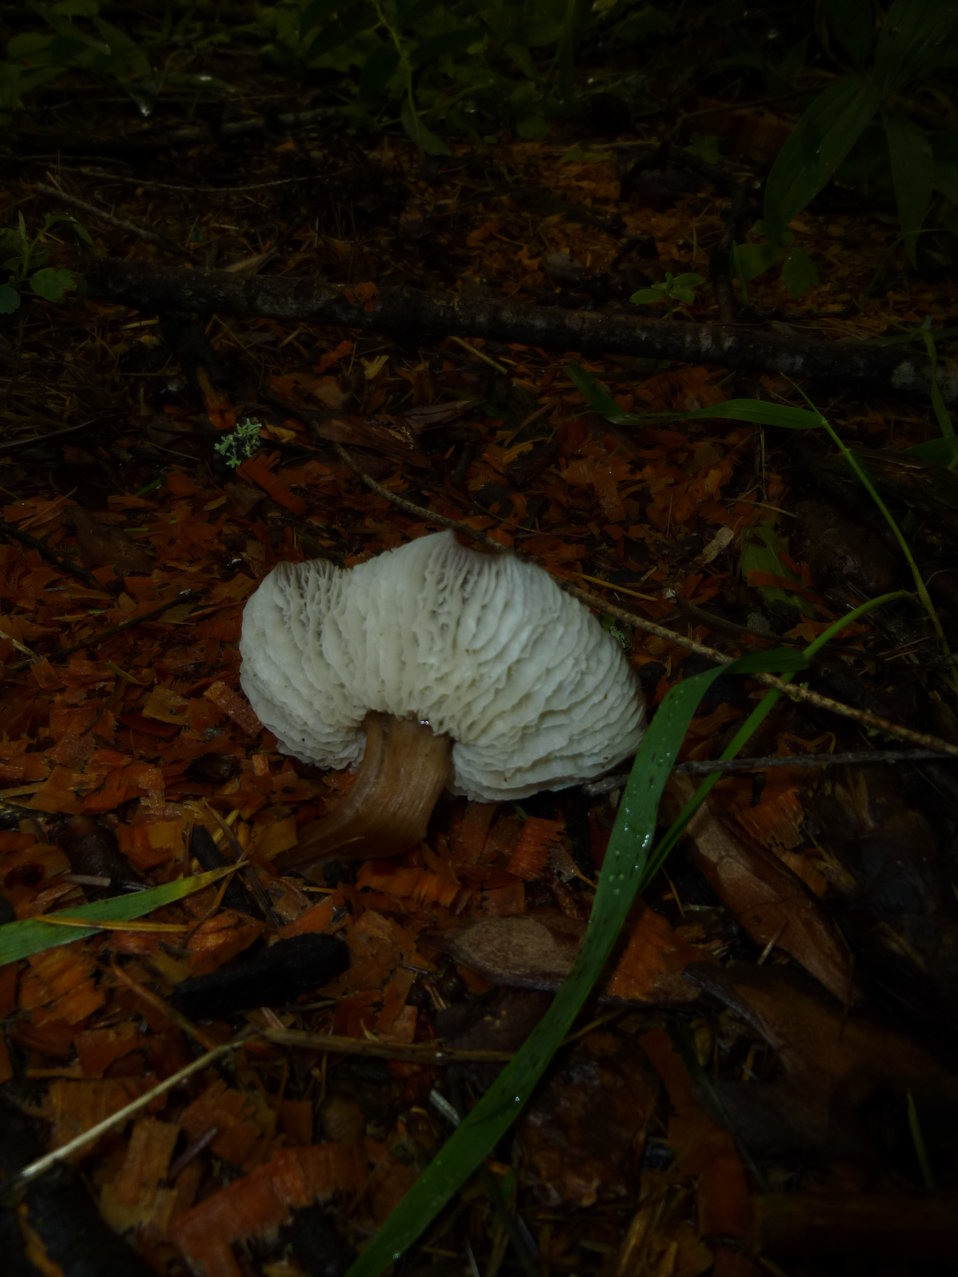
The Forest Floor

Mushrooms are abundent as you walk in the forested areas at the Creston National Fish Hatchery.

Credit: Evie Bradley / USFWS

Photo Contest Entry #109